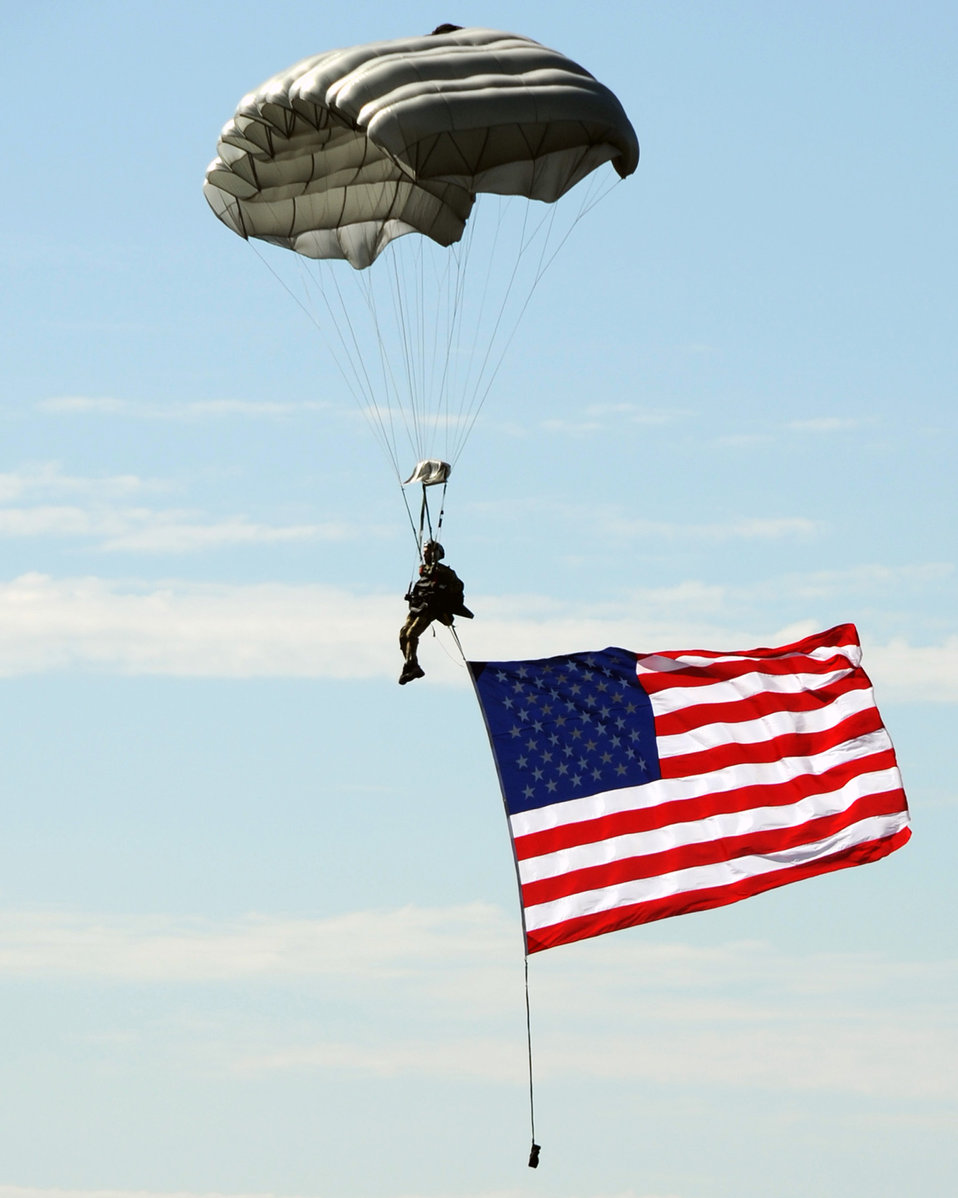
Just dropping in...

An Airman parachutes to the ground from a C-17 Globemaster III while streaming an American Flag July 24, 2011, at Joint Base Lewis-McChord, Wash., during the opening ceremony of the 2011 Air Mobility Command Rodeo. The Air Mobility Rodeo is the Air Force's premier international combat skill and flying operations competition designed to develop and improve techniques, procedures and interoperability, while optimizing international mobility partnerships and enhancing mobility operations.